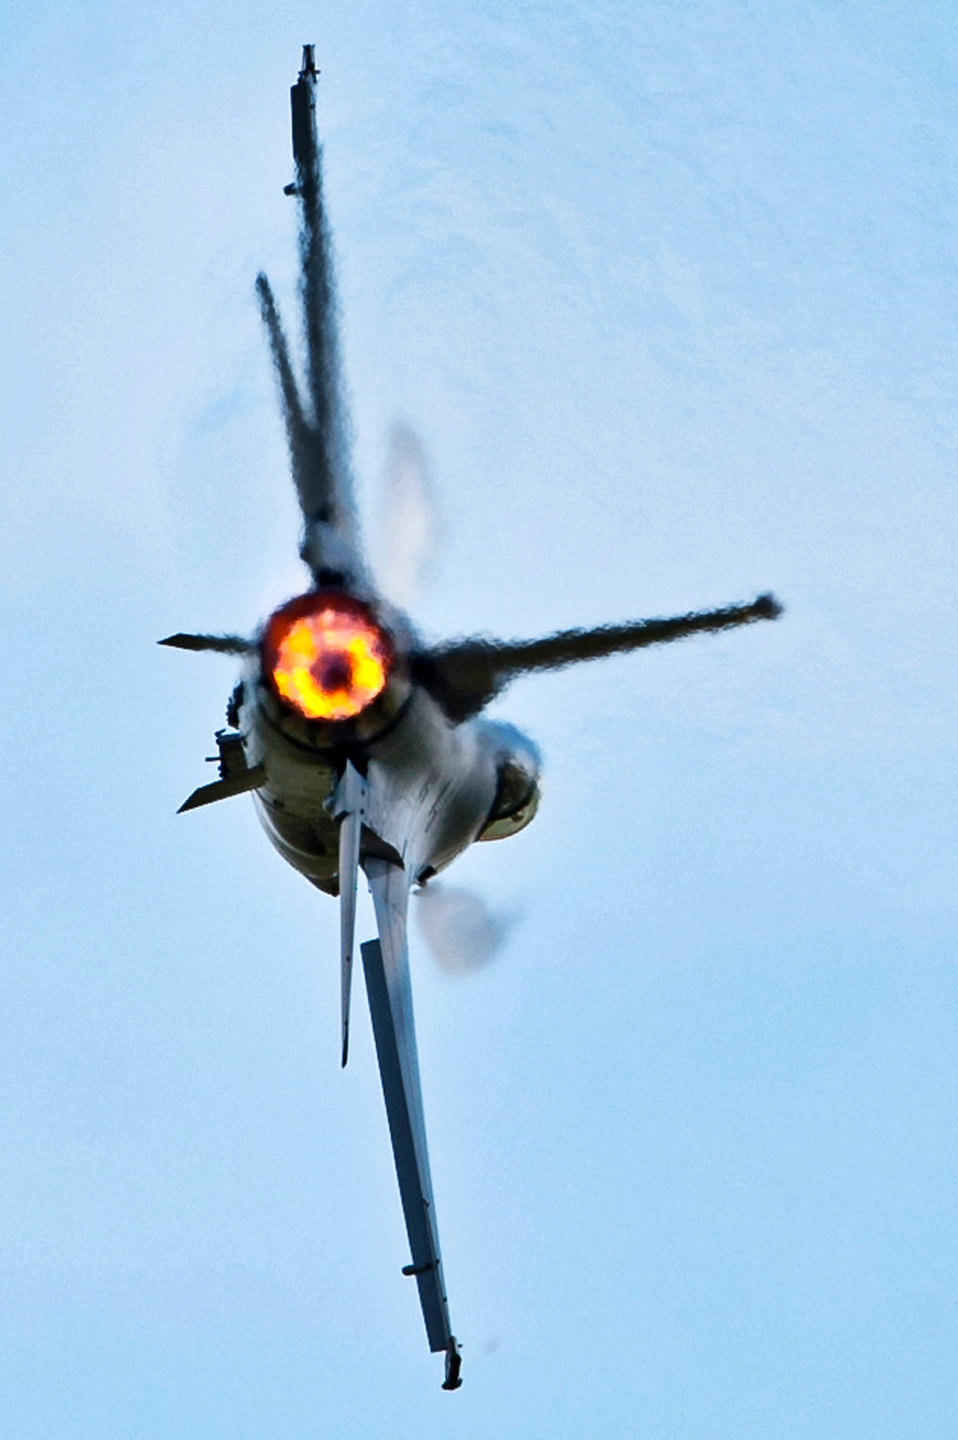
Spreading its wings

An F-16 Fighting Falcon flies June 4, 2011, above Ellsworth Air Force Base, S.D., during the 2011 Dakota Thunder air show.